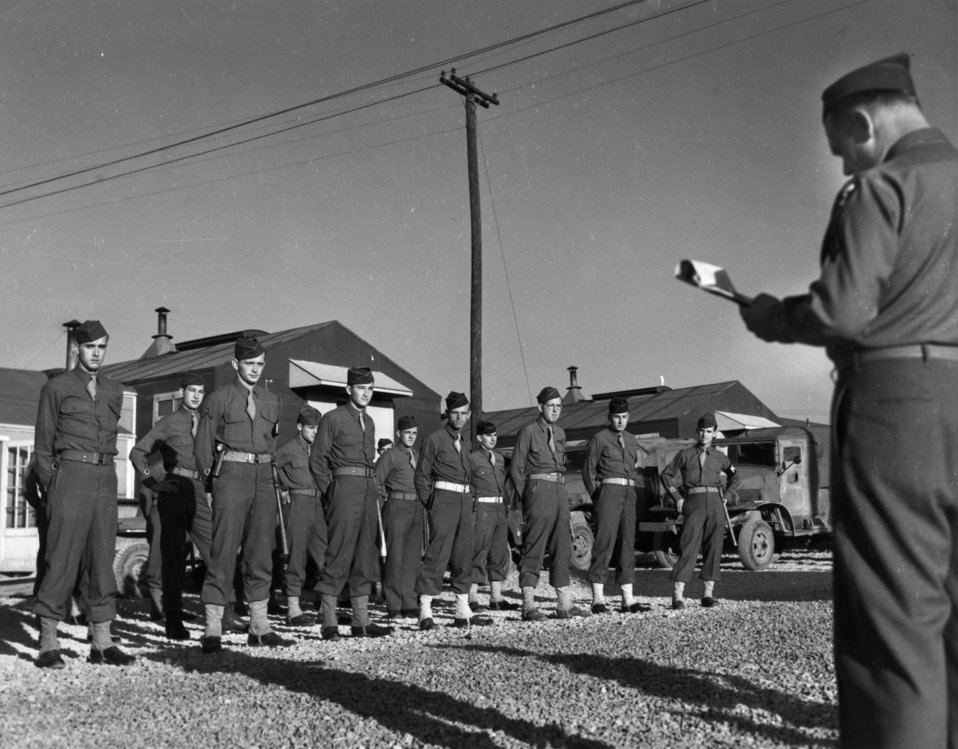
Army Activity at Oak Ridge